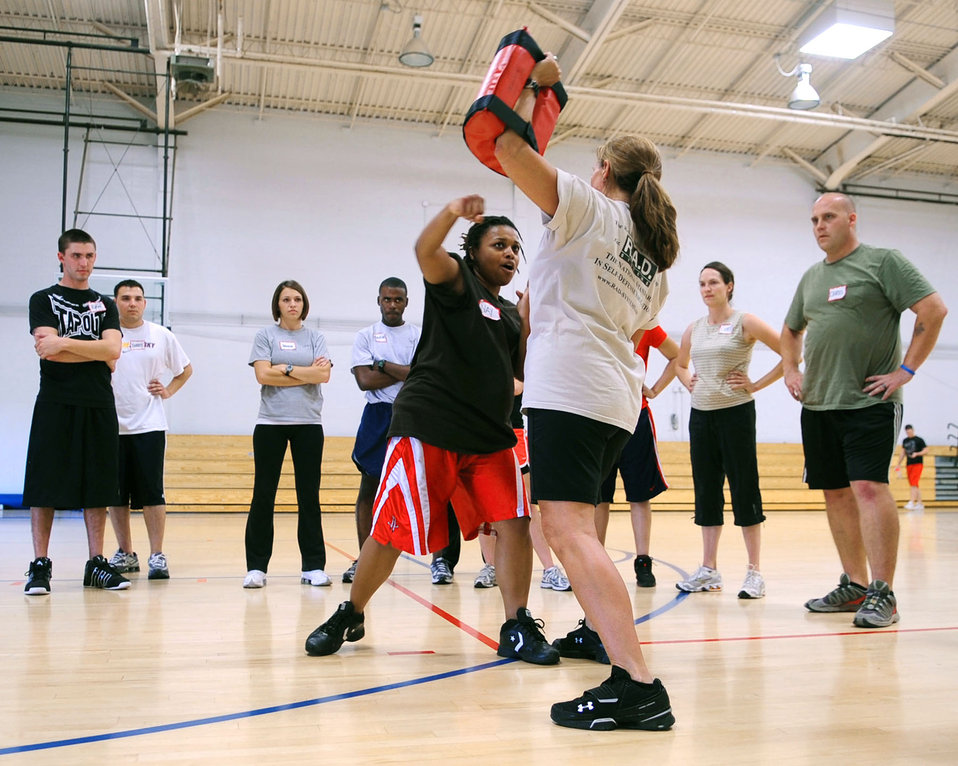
RADS at Davis-Monthan

Staff Sgt. Nakenya Portela-Bailey demonstrates a defense maneuver during the Rape Aggression Defense Systems certification course Sept. 14, 2010, at Davis-Monthan Air Force Base, Ariz. The RADS is a comprehensive course that begins with awareness, prevention, risk reduction and risk avoidance, while progressing on to the basics of hands-on defense training. a member of the 355th Security Forces Squadron.